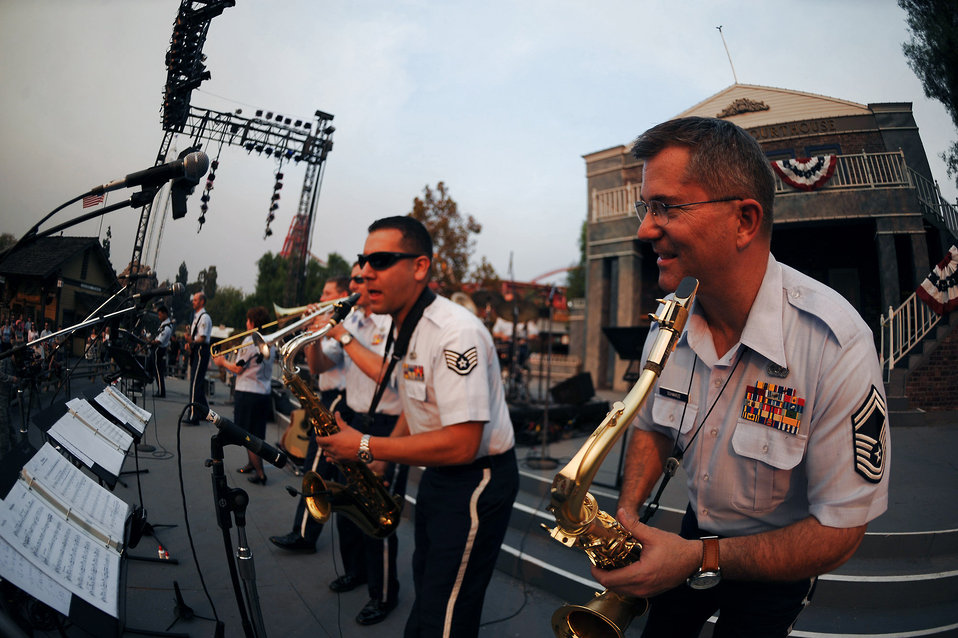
Bands spread Air Force message through music

Members of the Air National Guard Band of The Southwest perform Nov. 15 at Knott's Berry Farm in Los Angeles. The band is performing during Air Force Week Los Angeles, which is an event designed to educate the local population about the Air Force's capabilities and missions through various activities and exhibitions all over the Los Angeles area.